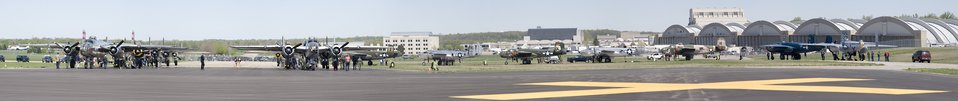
68th Reunion of Doolittle Raiders Flyover

In less than a minute, several photos were taken to create this merged photo of 17 B-25 Mitchell bombers are ready to take off for a formation flyover prior to the Doolittle Raiders Memorial Service in the museum's Memorial Park on April 18, 2010 at the National Museum of the U.S. Air Force at Wright-Patterson Air Force Base, Ohio. This is one of the largest formation flights of the Mitchell Bombers since the historic raid over Tokyo, Japan during World War II.